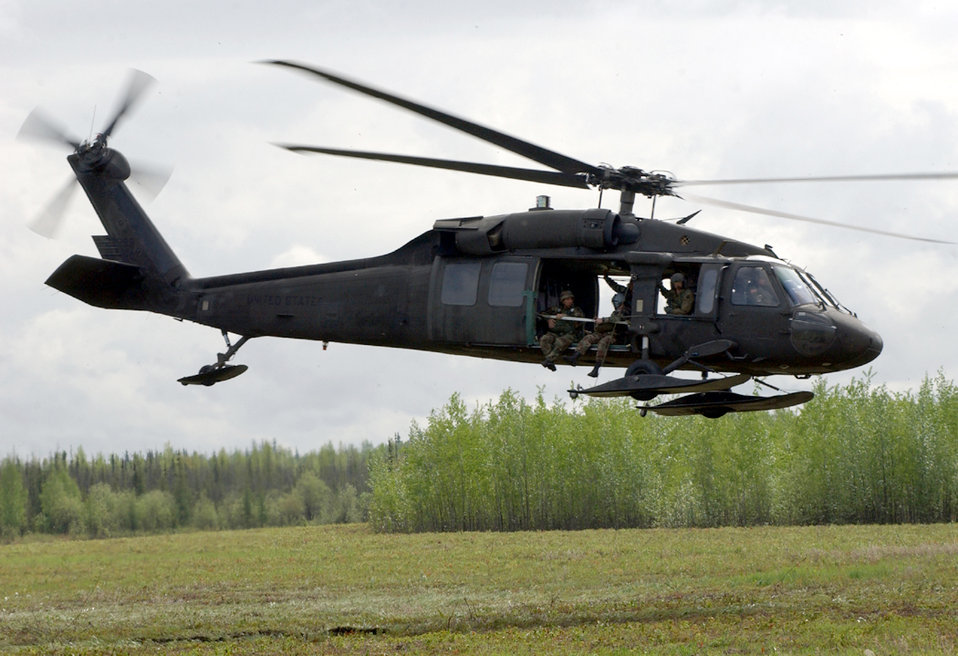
Jumpers ready?

OVER ALASKA -- A Blackhawk helicopter takes Airmen assigned to the 3rd Air Support Operations Squadron at Fort Wainwright Army Airfield, Alaska, on a training mission May 25.